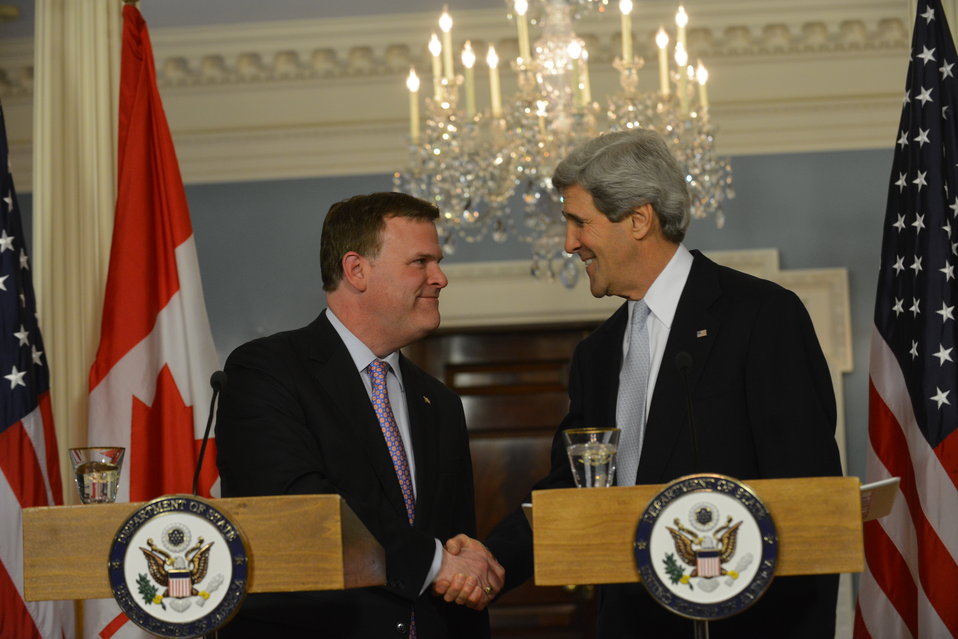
Secretary Kerry Shakes Hands With Canadian Foreign Minister Baird

U.S. Secretary of State John Kerry shakes hands with Canadian Foreign Minister John Baird after their joint press conference at the U.S. Department of State in Washington, D.C., February 8, 2013.